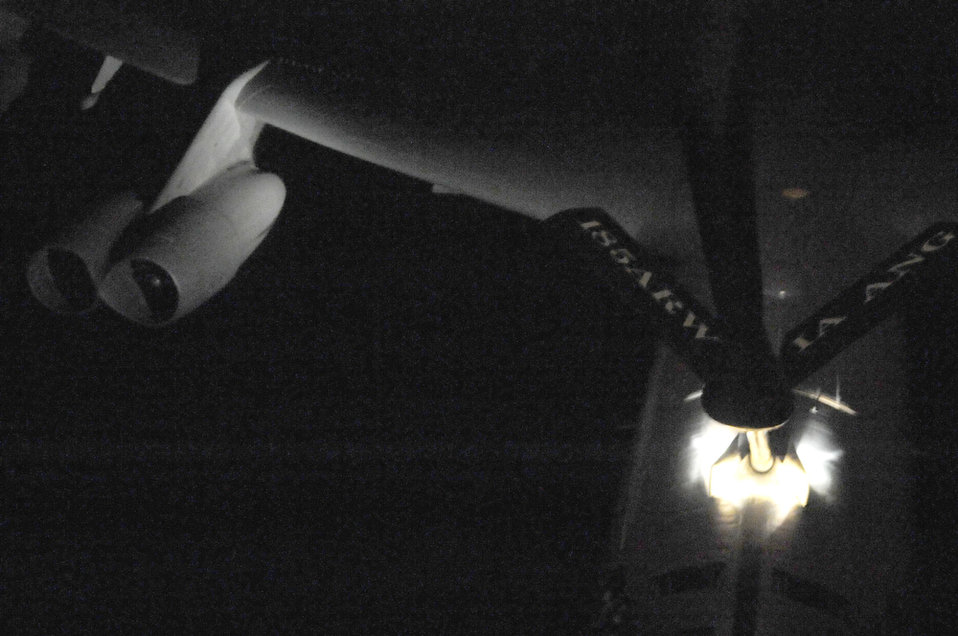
96th ARS Airmen start flying at Hickam

A B-52 Stratofortress is refueled Dec. 14, 2010, over the Pacific Ocean by the members of the 174th Air Refueling Squadron. It was the first operational mission for the 96th ARS, which was activated in September but won't be fully operational until August of 2011.